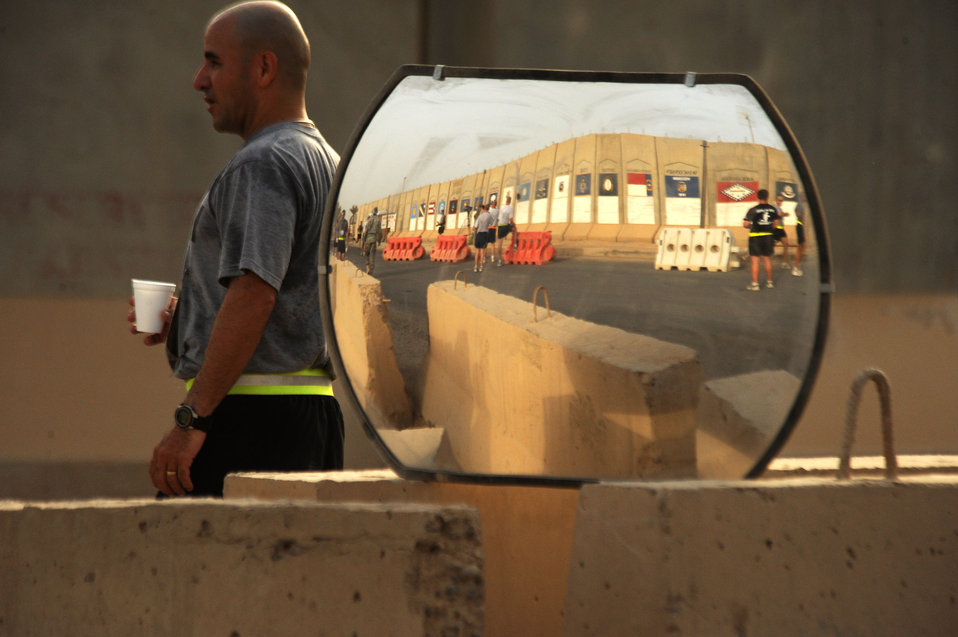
Ready for the cool down

A servicemember cools down after participating in the first Baghdad Boilermaker 15-kilometer race June 13 at Sather Air Base, Iraq. More than 240 deployed people participated in the race.